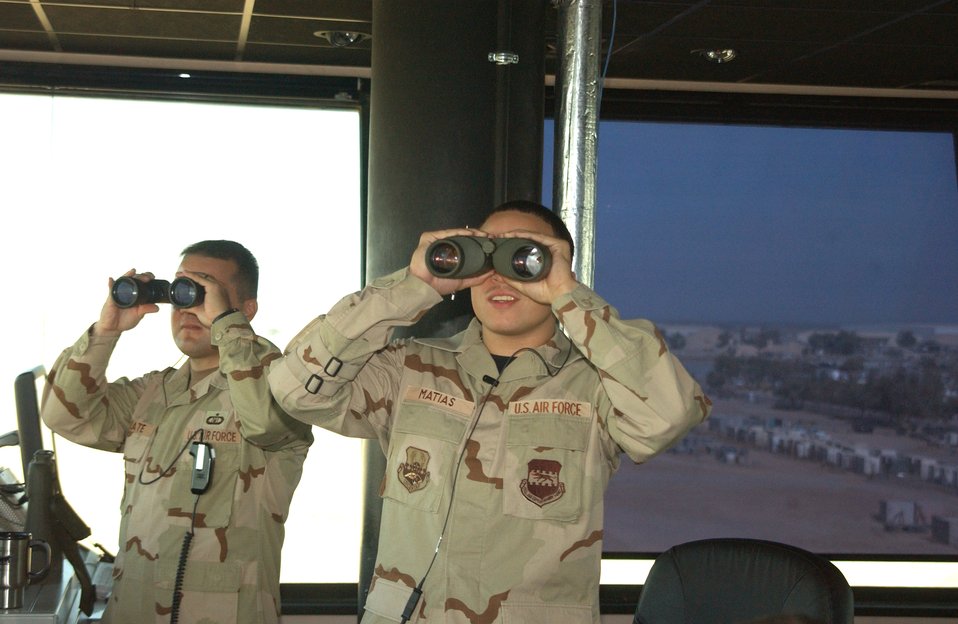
Balad Airman earns national air traffic control honors

Senior Airman Joshua Matias (right) scans the flightline Oct. 17 at Balad Air Base, Iraq. He was recognized with the 2006 Air Traffic Control Association Lingiam Odems Memorial Award. Airman Matias is an air traffic control apprentice with the 332nd Expeditionary Operations Support Squadron.